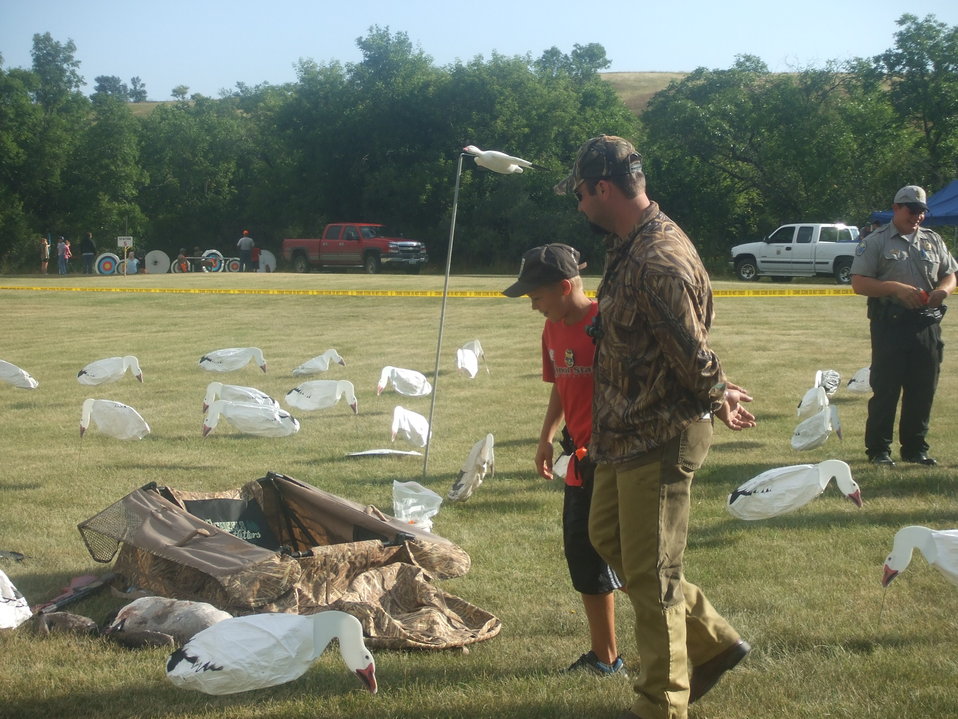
2011 Greenwing Day - Game Warden scenario session

Des Lacs National Wildlife Refuge, Tasker's Coulee